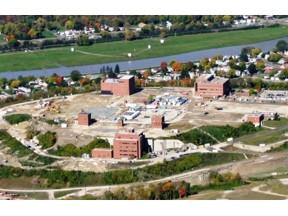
Mound Site

An aerial photo of the Miamisburg Site located in Ohio after cleanup activities had begun.